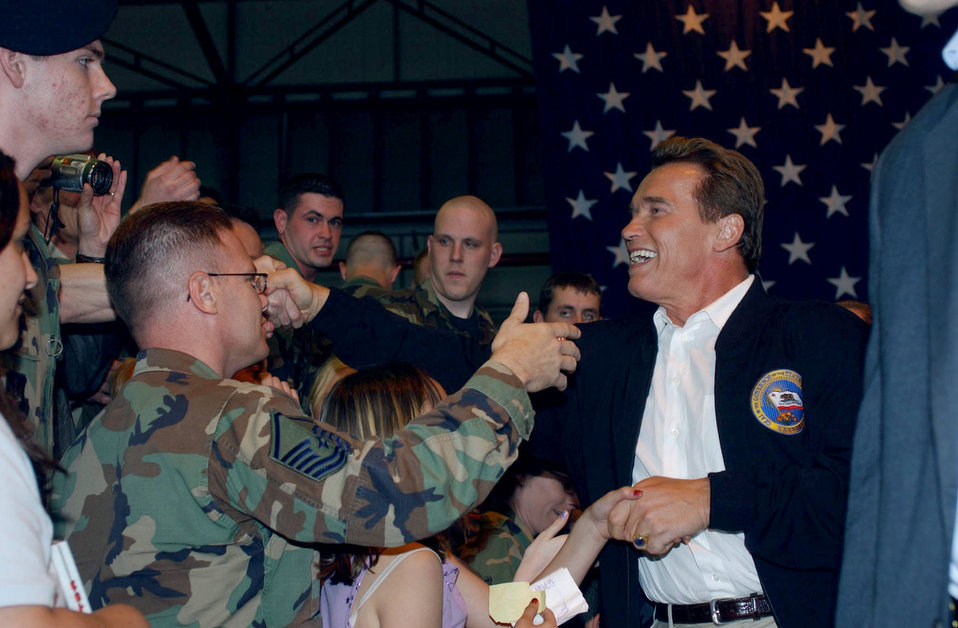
Schwarzenegger thanks Airmen

RAMSTEIN AIR BASE, Germany -- California Gov. Arnold Schwarzenegger shakes hands with Airmen during a visit here May 3. The governor thanked Airmen for